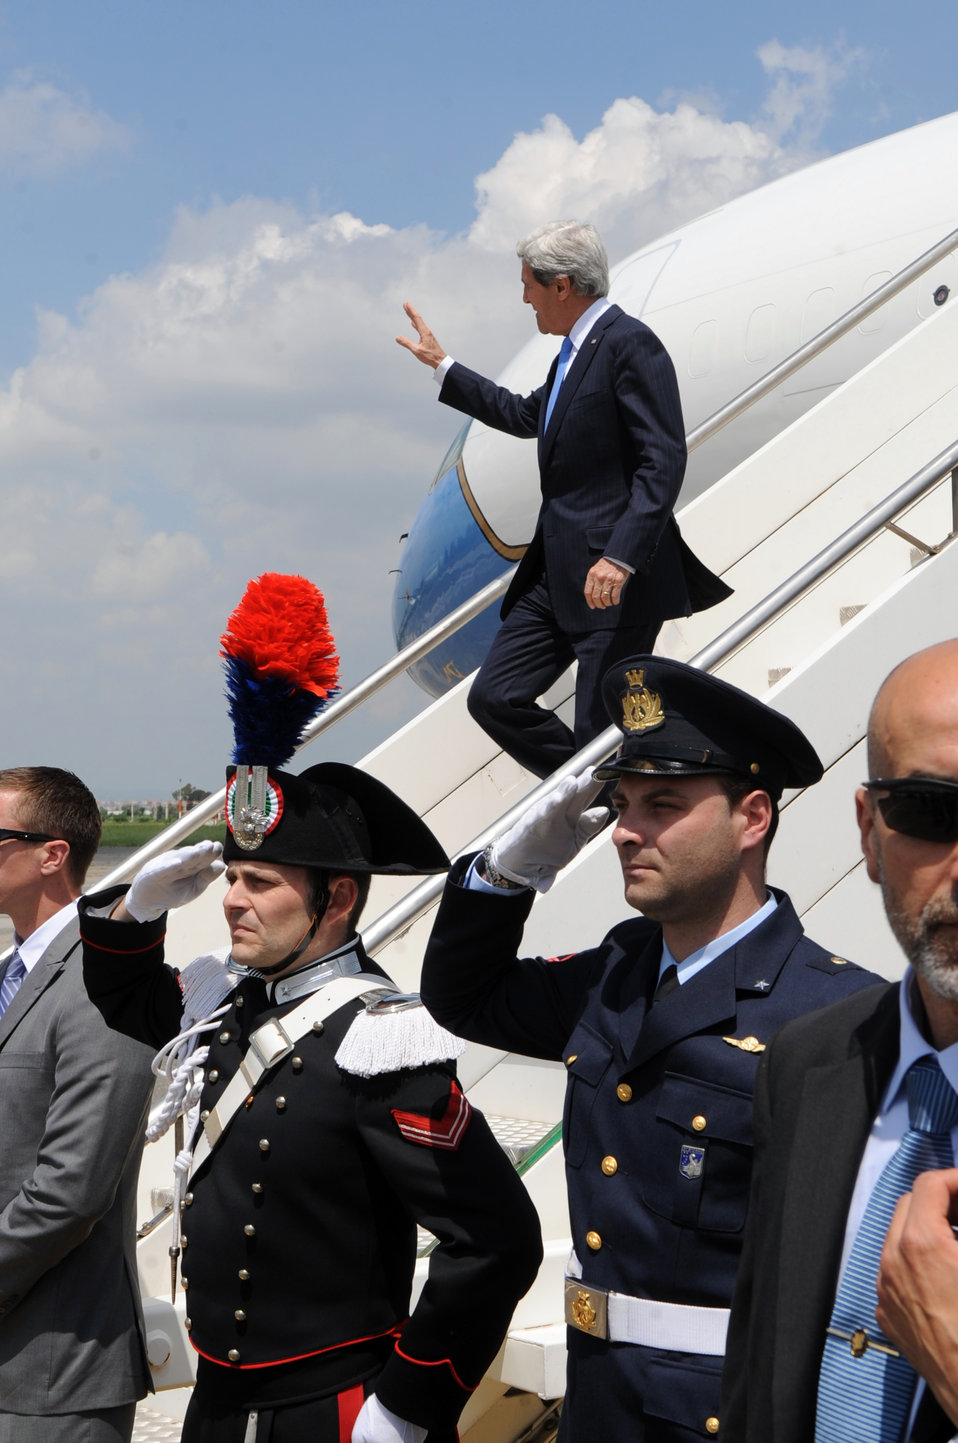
Secretary Kerry Arrives in Rome

U.S. Secretary of State John Kerry waves upon landing at Ciampino Airport outside of Rome, Italy, on May 8, 2013.